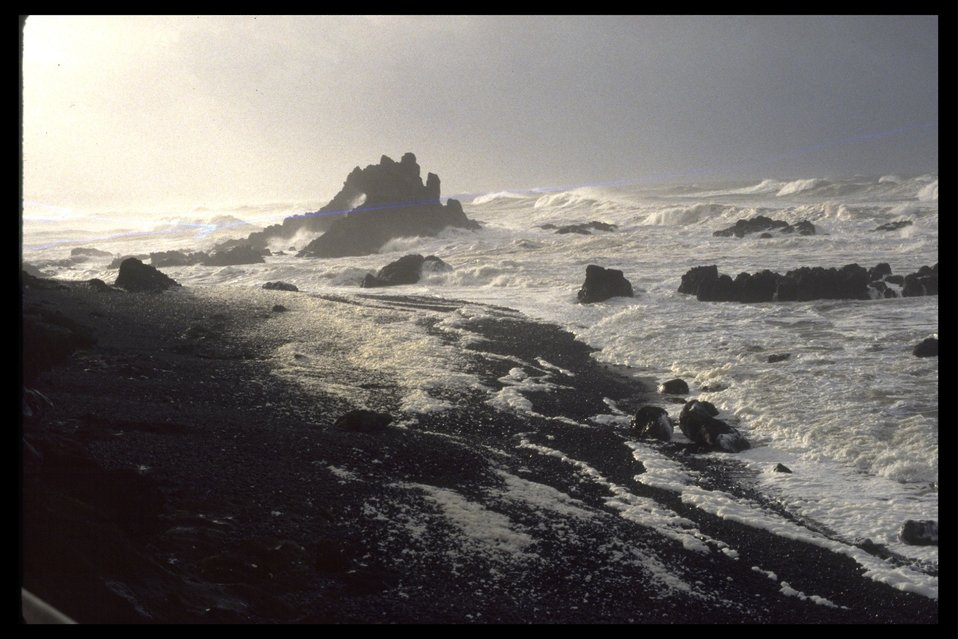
Storm waves on Cobble Beach.